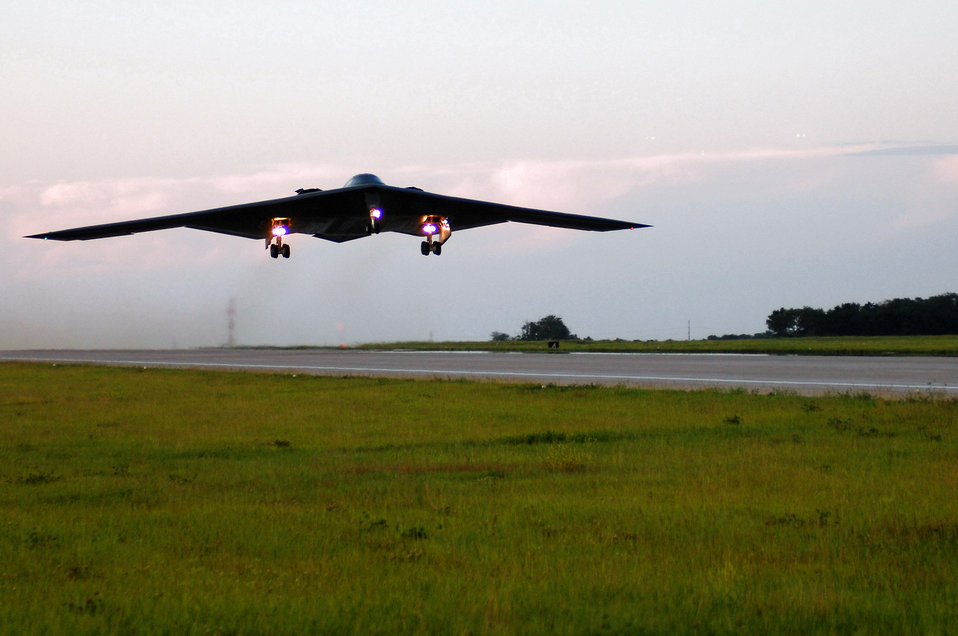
Whiteman Airmen make first all-air Guard B-2 flight

Col. Gregory Champagne and Maj. David Thompson take off on a B-2 Spirit mission June 18 at Whiteman Air Force Base, Mo. It was the first sortie flown and launched by Air National Guard members. Colonel Champagne is the 131st Fighter Wing vice commander and Major Thompson is assigned to the 131st FW.